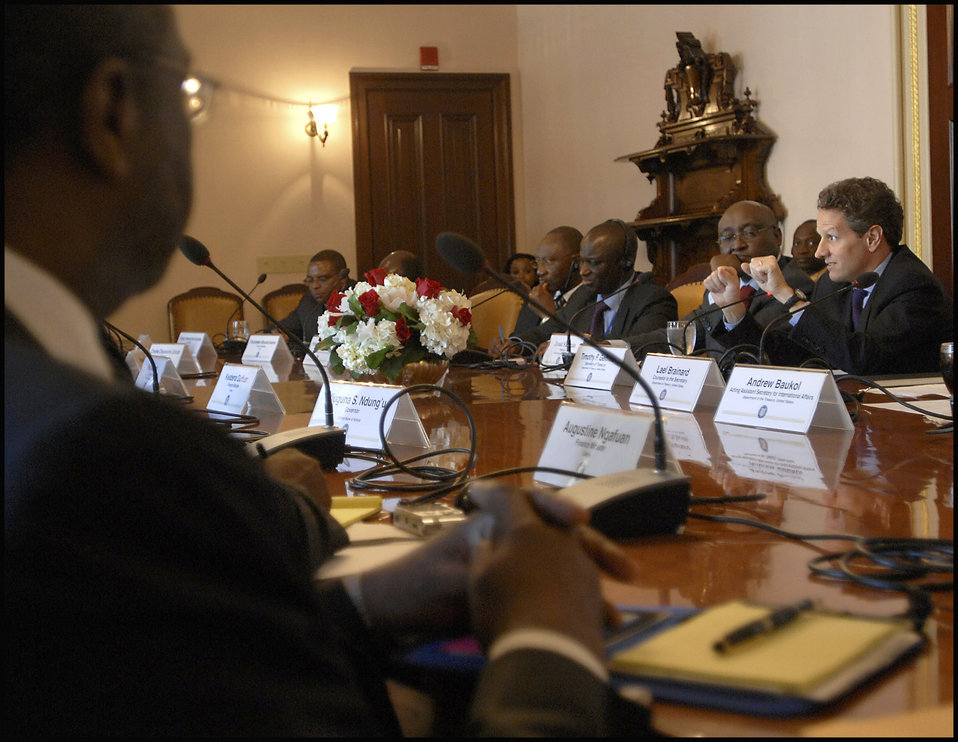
Roundtable with African Ministers

On April 25, 2009, Secretary Geithner hosted a roundtable with African Ministers at Treasury.